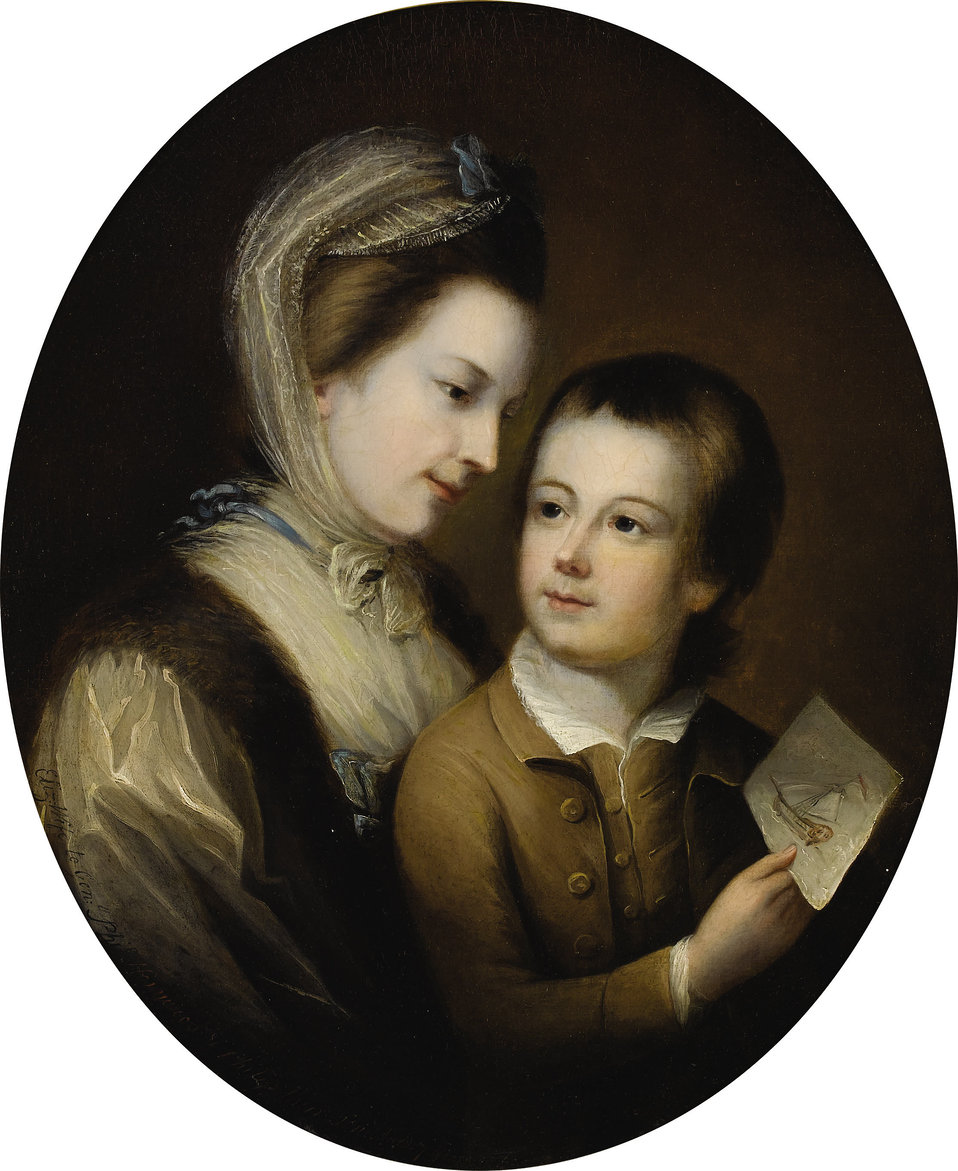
Attrib. to Thomas Gainsborough - Portrait of Elizabeth Honywood and her son Philip